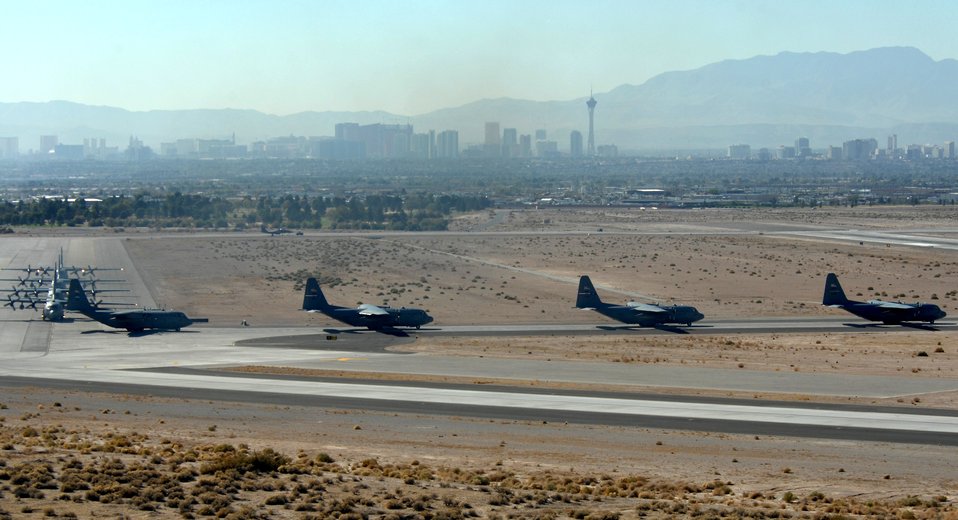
Mobility exercise

C-130 Hercules aircraft taxi to the parking ramp at Nellis Air Force Base, Nev., after completing airdrop missions for a mobility exercise over the Keno range in Nevada.